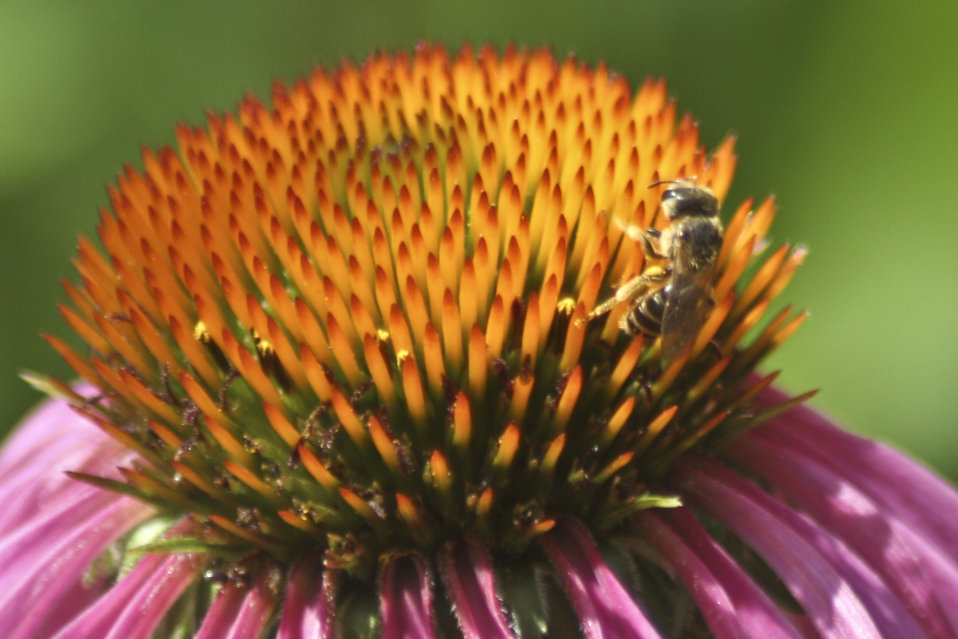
Photo of the Week - Honeybee on a purple coneflower

Photo of the week - 6/23/2010

Honeybee on a purple coneflower at the Northeast Regional Office in Hadley, Massachusetts.

Credit: Jamie Weliver/USFWS

Celebrate National Pollinator Week - June 21-27, 2010!